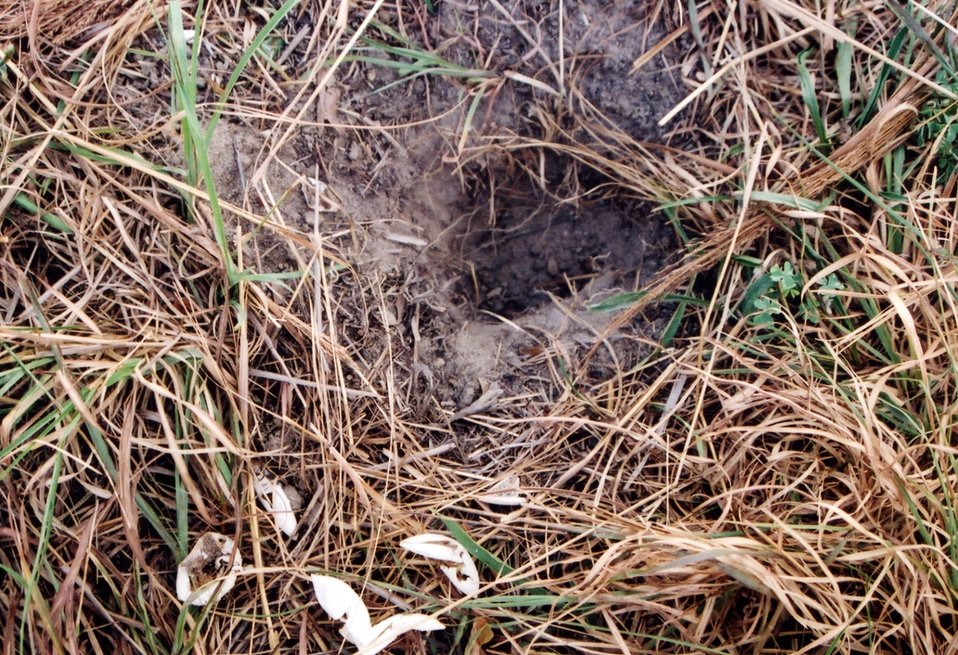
Diamondback terrapin nest in dirt. Note presumed hatched egg casings in lower left.